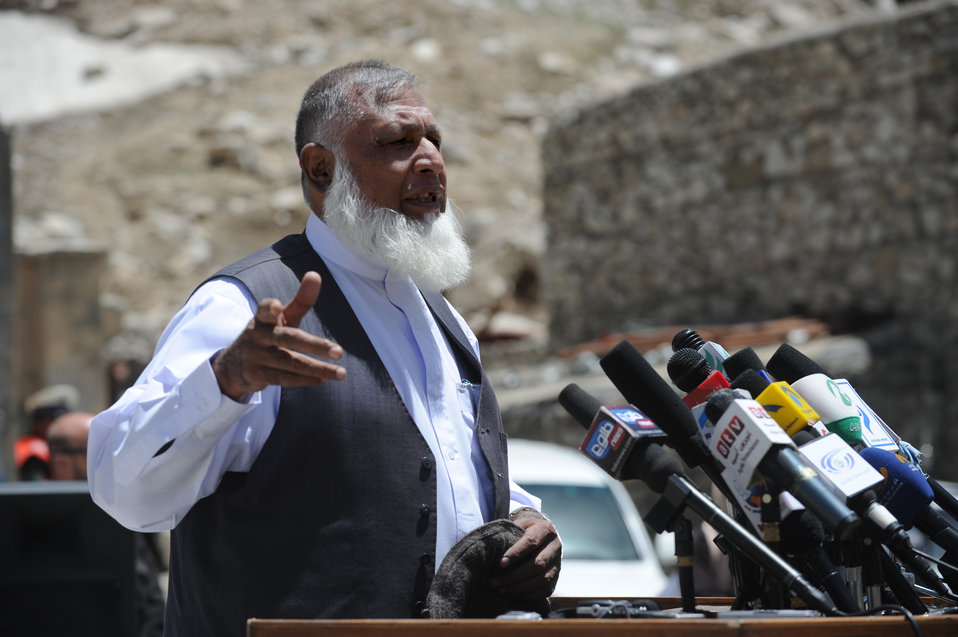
Baghlan Governor Mohammad Akbar Barakzai makes remarks during a ceremony to mark the beginning of renovations at the Salang Tunnel on the border of Parwan and Baghlan Provinces, Afghanistan, on Wednesday, June 15, 2011. (S.K.Vemmer/Department of State)